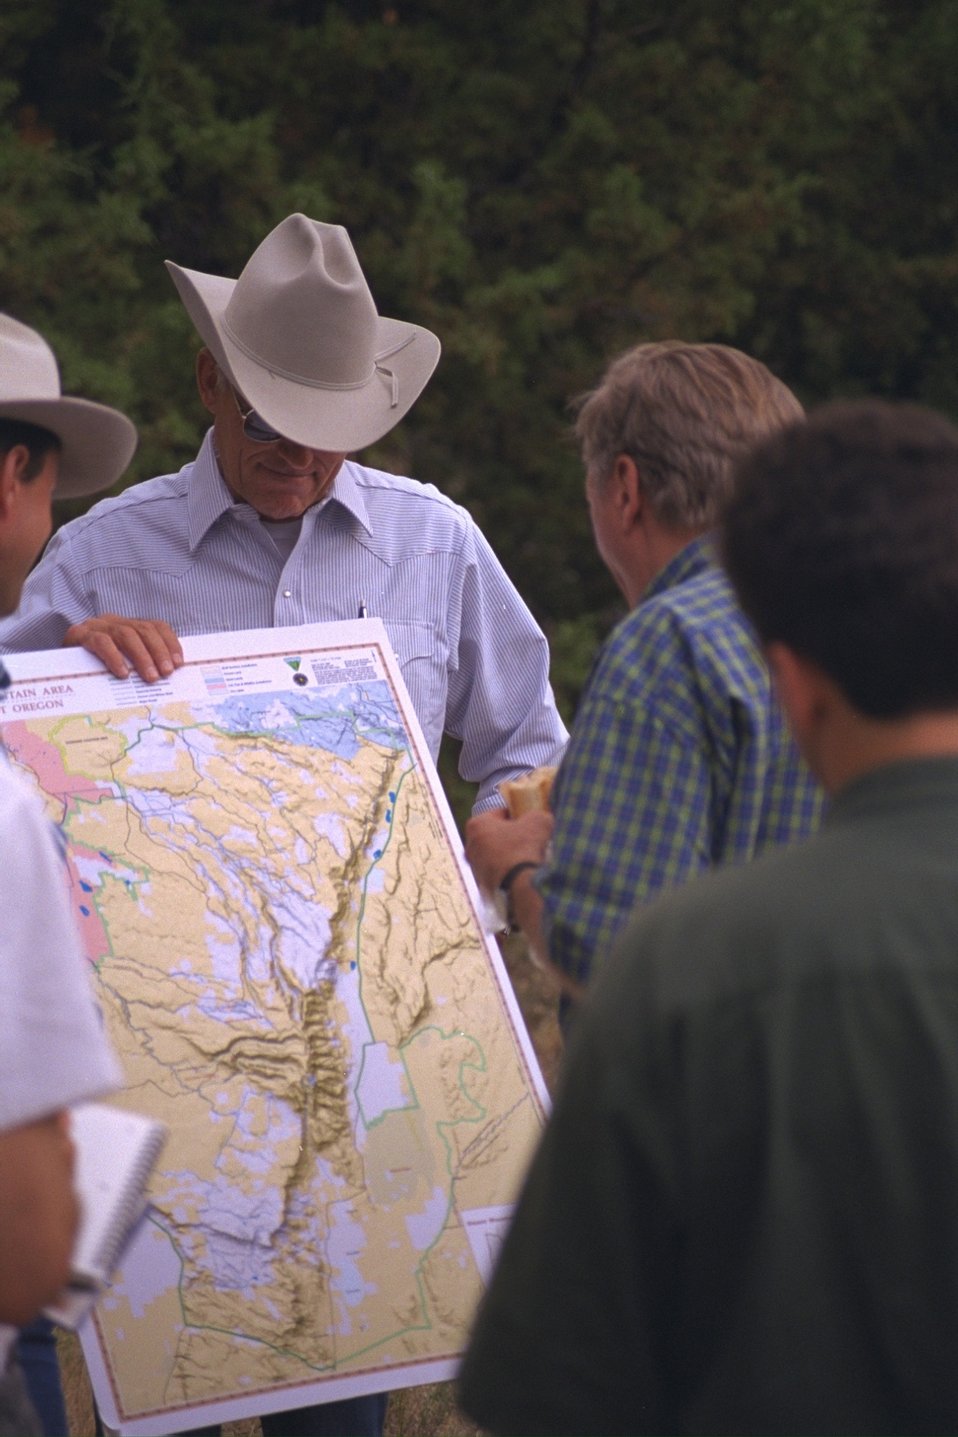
Doc Hatfield and Secretary Babbitt confirm Steens designation with Jamie Workman, the USDI press secretary, looks on.